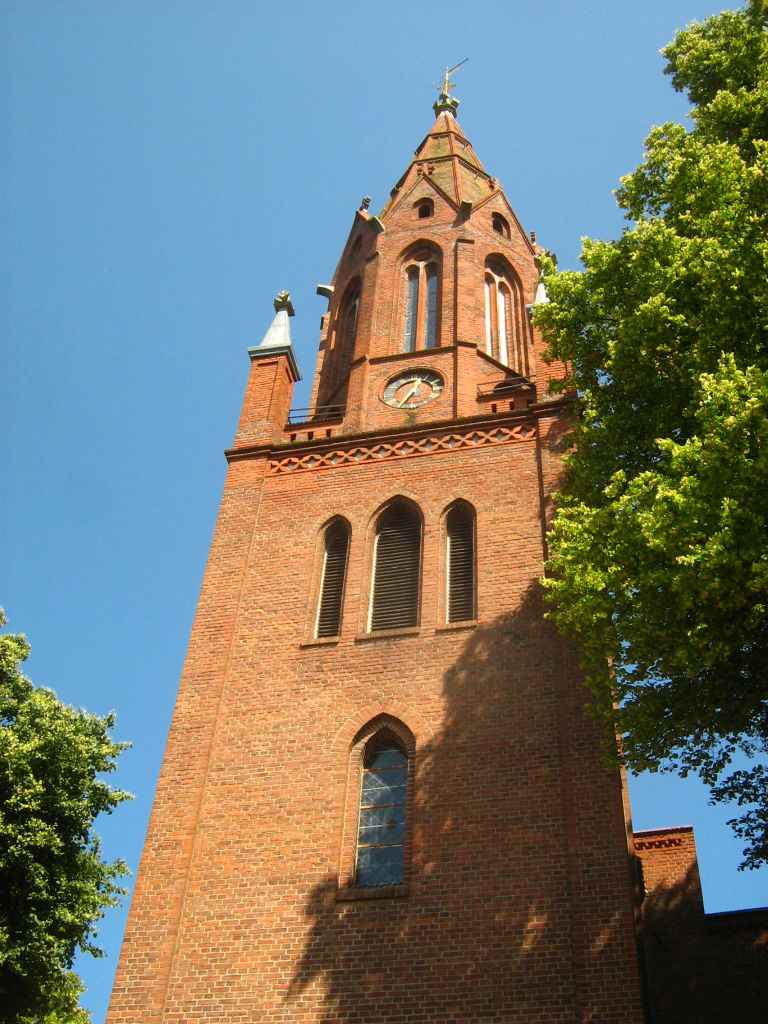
Deutsch: Ueckermünde, Kirchenturm